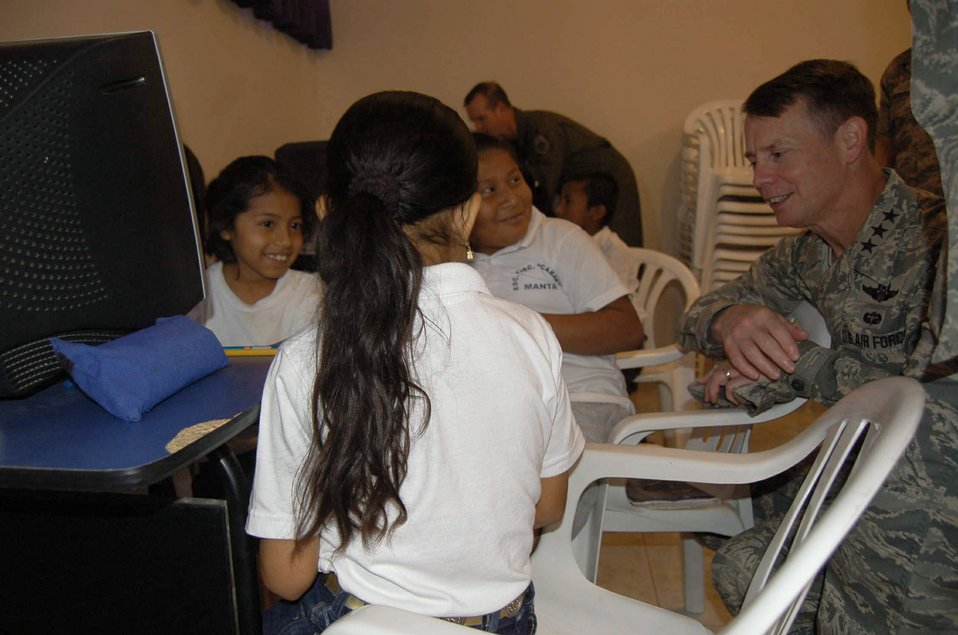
Airmen visit school in Ecuador, donate supplies

Lt. Gen. Glenn F. Spears quizzes students on geography Dec. 10 at San Juan Elementary School in Ecuador. The visit with the children was part of a weeklong holiday tour to engage with forward deployed personnel and assist nearby communities in seven Latin American countries during the holiday season. General Spears is the Southern Command deputy commander.